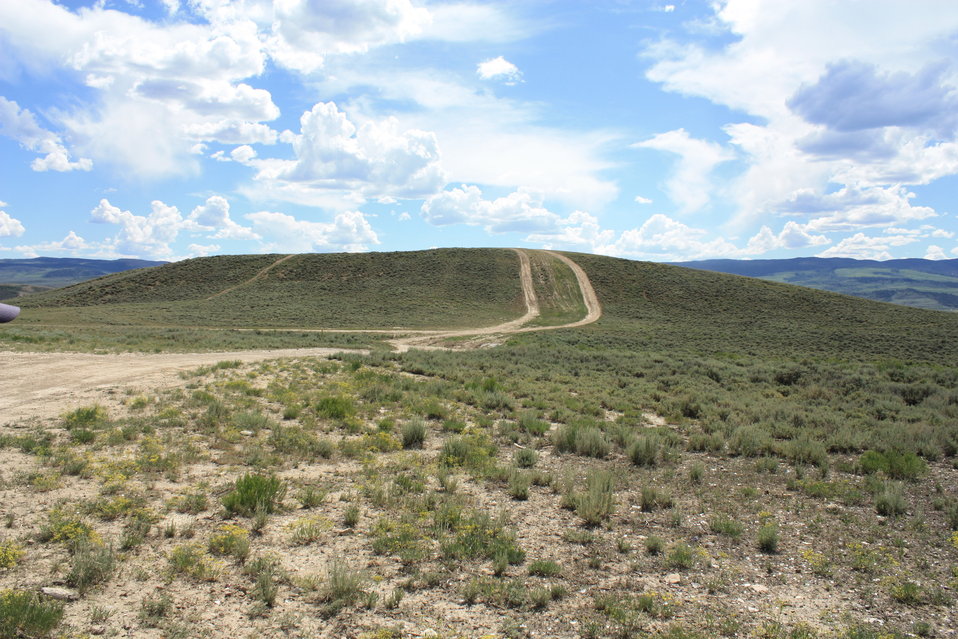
Osterhout Milkvetch Habitat

Osterhout milkvetch grows on light-colored shale soils near the Town of Kremmling in northern Colorado. Off-highway vehicle (OHV) recreation attracts visitors from around the state.

Here, an OHV trail runs through an Osterhout milkvetch site in the lower portion of the picture. The State and Town of Kremmling are working to control use in this area.

Photo credit: USFWS
...........................................................................

BACKGROUND:
The Osterhout milkvetch (Astragalus osterhoutii) and the Penland beardtongue (Penstemon penlandii) are both extremely rare plants endemic to barren white shale outcrops of the Niobrara Shale and Troublesome Formations in Grand County of northern Colorado. Both species are only found near the Town of Kremmling in “Middle Park,” a high elevation sagebrush park at 7,500 feet surrounded by various ranges of the Rocky Mountains in Grand County, Colorado.

The Osterhout milkvetch, a member of the pea family (Fabaceae), is a slender-stemmed plant with elliptical leaves and creamy white flowers in clusters at the end of foot-long stalks. It was discovered in 1905 by one of Colorado’s pioneer botanists, George Osterhout. The species only grows on highly seleniferous (containing the element selenium) soils that accumulate in foliage and causes the plant to smell pungently of garlic. Only a small proportion of the many milkvetch species are known to accumulate this toxic chemical. Osterhout milkvetch is known from five small and scattered locations within an eight-mile radius, across an estimated 600 acres of habitat.

The Penland beardtongue, a member of the plantain family (Plantaginaceae), was discovered much later than the Osterhout milkvetch. In 1986, two Colorado botanists, David Johnson and John Anderson, discovered the new species on a visit to an Osterhout milkvetch site along Troublesome Creek. The Penland beardtongue is a small plant with thin, needle-like leaves and bright blue to violet flowers. It is known only from a unique badland area along Troublesome Creek extending 4 miles north to south on an estimated 800 acres. In order to reproduce, this species requires pollination by native ground-dwelling, solitary bees in the genus Osmia (mason bees).

Today, these two Middle Park endemic species are threatened by commercial, residential, and agricultural property development, the associated new utility installations and access roads, reservoir operations, off-highway vehicle recreation, oil and gas exploration, and livestock grazing. A loss of pollinators and their habitat due to development is also a threat to both species. Because of the limited ranges of the two species, their small population sizes, and numerous threats, they were listed as endangered under the Endangered Species Act in 1989.

Thirty-three percent of the Osterhout milkvetch and a small percentage of the Penland beardtongue populations are on private lands. The Endangered Species Act does not protect plants on private lands and therefore, all conservation actions on private lands are voluntary. Funding is available to landowners wanting to conserve the species. Please contact Gina Glenne or Ellen Mayo at 970-243-2778 for further information on this species and ways that you can help with conservation and recovery.